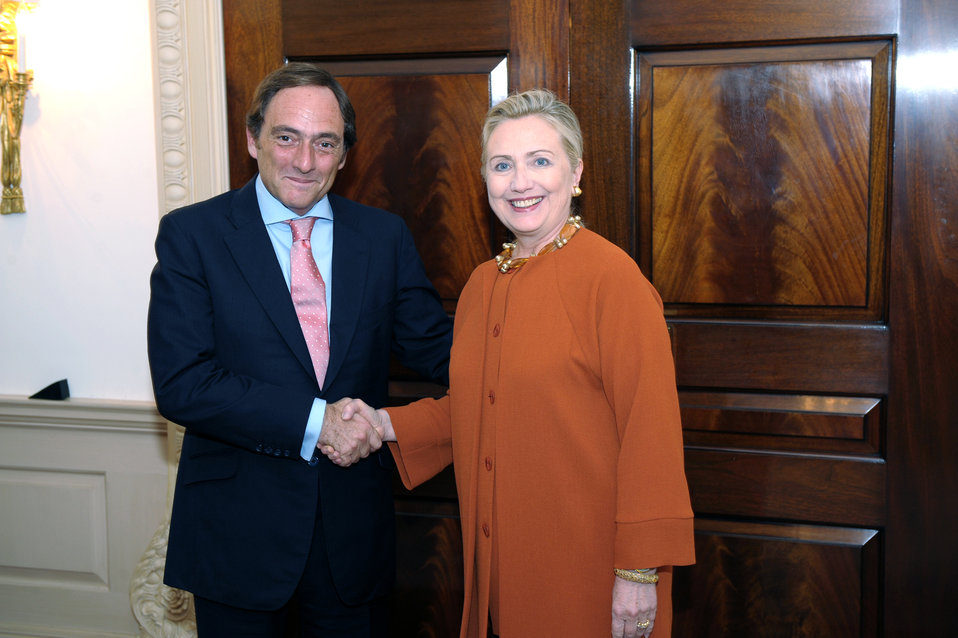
Secretary Clinton Shakes Hands With Portuguese Foreign Minister Portas

U.S. Secretary of State Hillary Rodham Clinton shakes hands with Portuguese Foreign Minister Paulo Portas before their bilateral at the U.S. Department of State in Washington, D.C., in September 27, 2011.